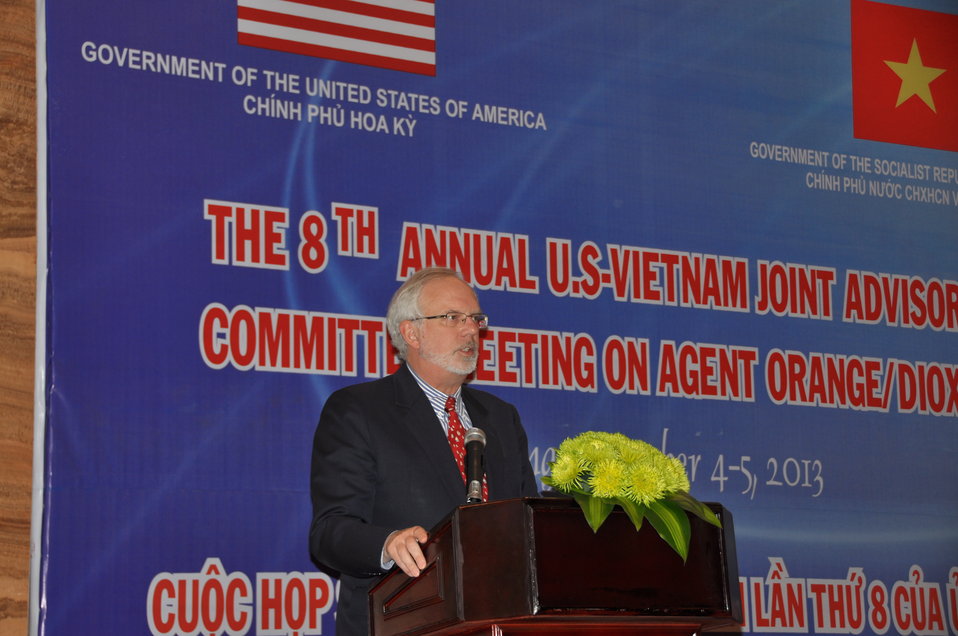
Ambassador David B. Shear speaks at 8th Annual JAC Meeting

Danang, December 4, 2013.